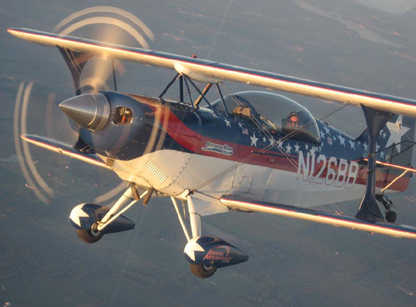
Grissom pilot pushes limits of aviation

Capt. Billy Werth pilots his Pitts SC2 aircraft. Captain Werth is assigned to the 434th Air Refueling Wing at Grissom Air Reserve Base, Ind., and in his civilian occupation, he is an aerobatics instructor.